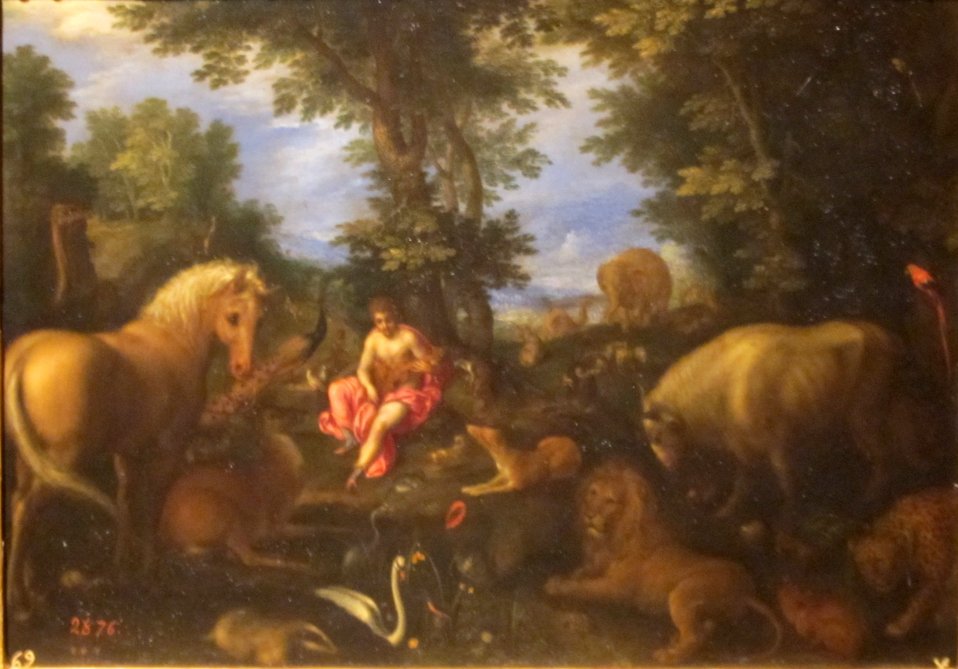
'Orpheus' by Jan Brueghel (I)